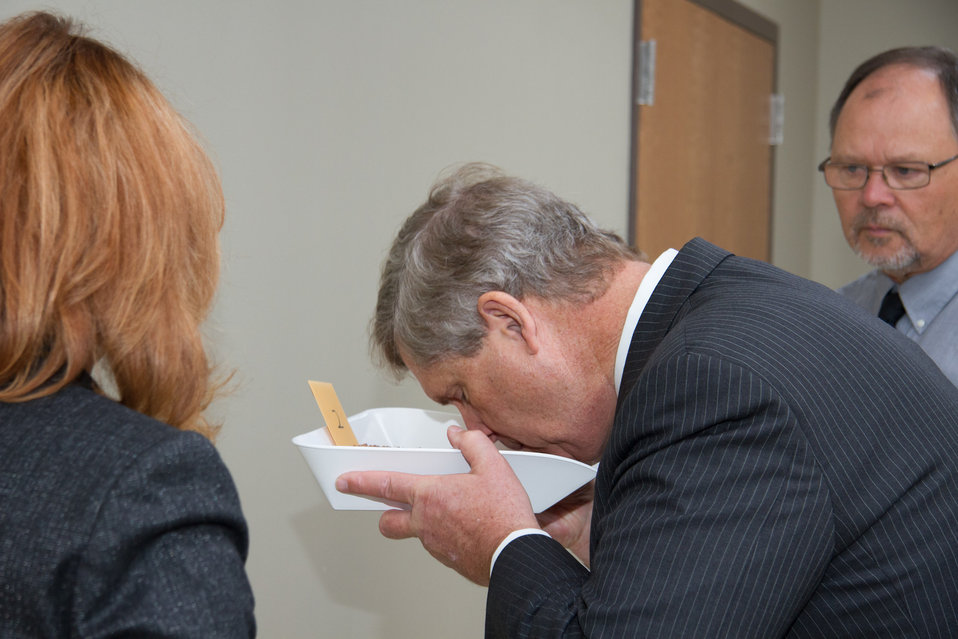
James Whalen, Chair of Grain Inspection, Packers and Stockyards Administration (GIPSA), Board of Appeals and Review, looks on, Agriculture Secretary Tom Vilsak checks the odor of a special sorghum sample that GIPSA developed to standardize the sorghum musty odor interpretive line in Kansas City, MO, on Wednesday, Oct. 23, 2013.